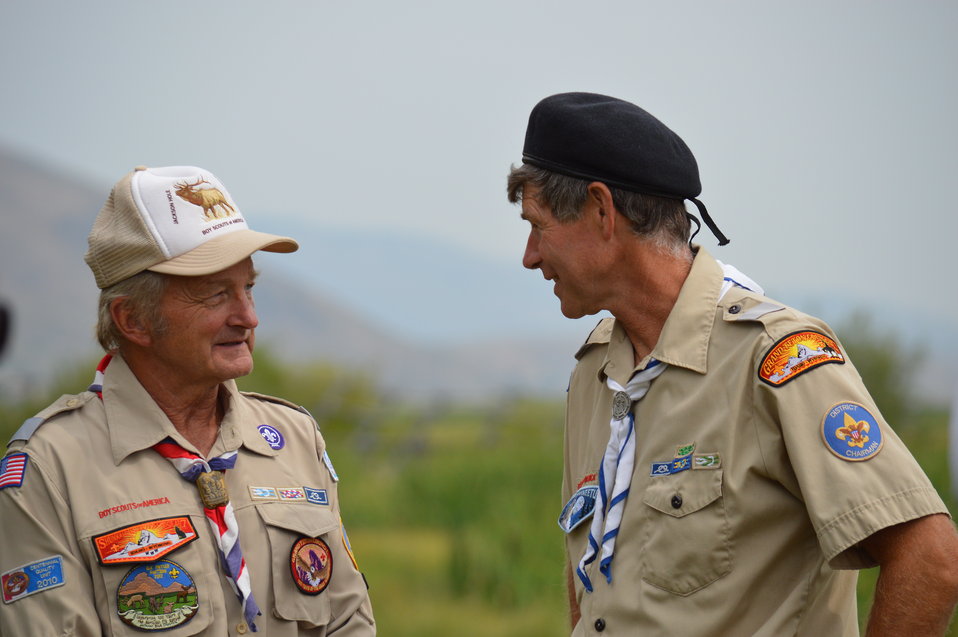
Scouting Leadership

Dick Shuptrine and Cliff Kilpatrick, both Scout leaders with the Jackson District Boy Scouts, attended the National Elk Refuge's centennial ceremony on August 10. The Scouts presented the refuge with a framed collection of patches at the ceremony.